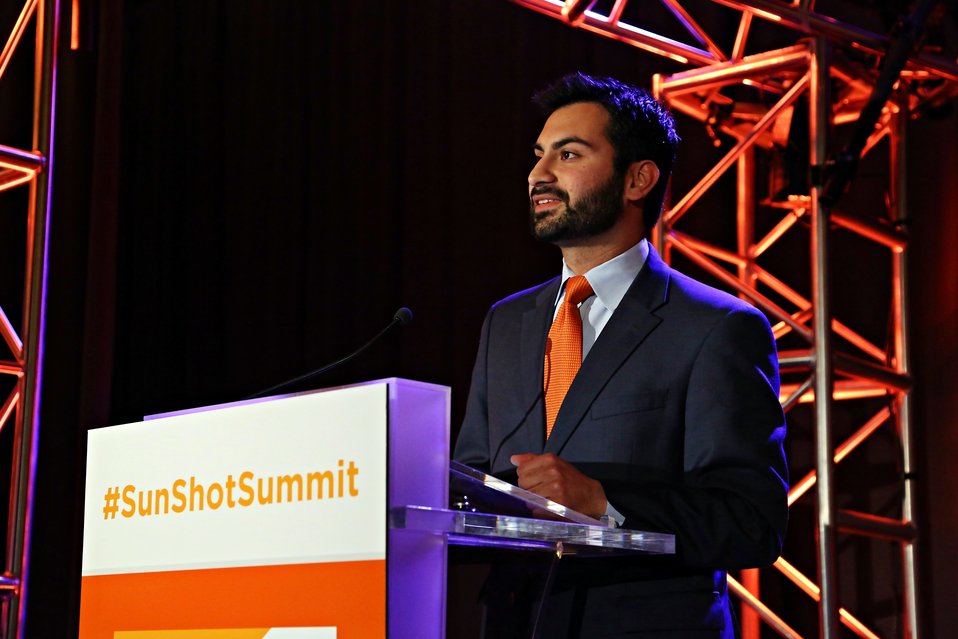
Keynote Session 7

Ali Zaidi, Deputy Director for Energy Policy, The White House Domestic Policy, Council described SunShot as a critical tool in the President's Climate Action Plan.